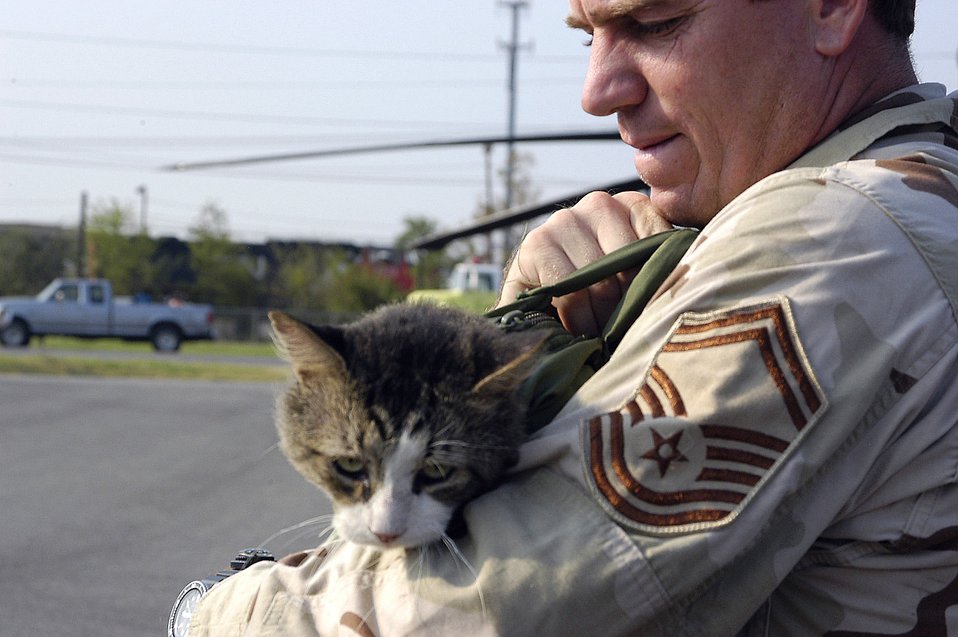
Misawa offers home away from home for pets

Servicemembers inbound or outbound to Misawa Air Base, Japan, now have a temporary home for their cat or dog with the opening of the base's new kennel. The kennel can house 21 dogs and 14 cats.